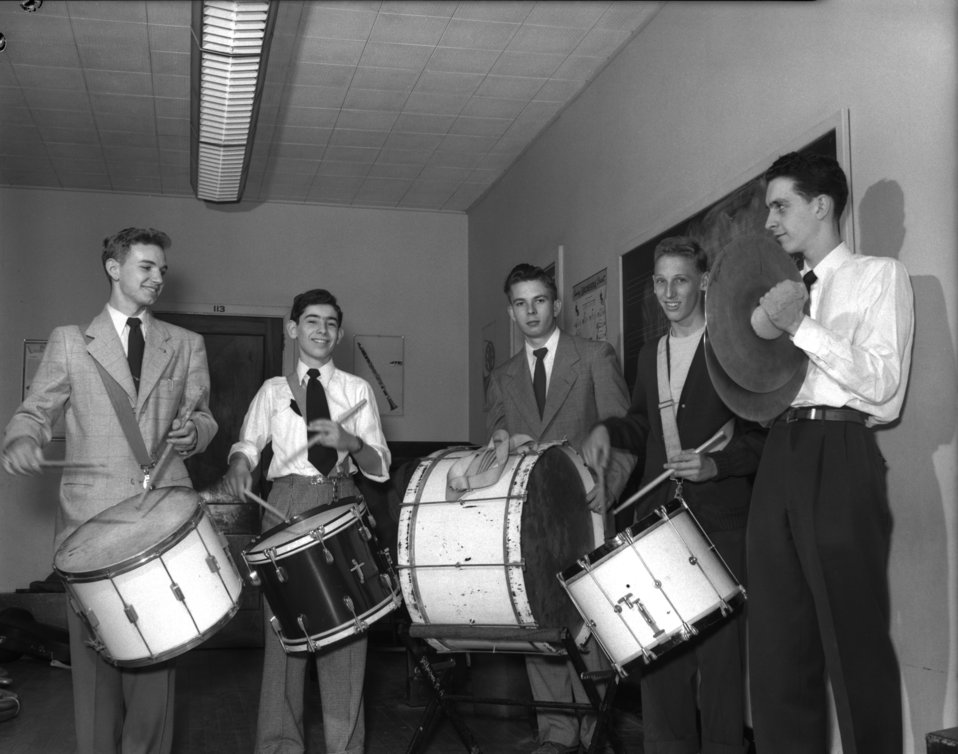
Tennessee State Band Festival Oak Ridge

004500-8c DOE photo Ed Westcott

Tennessee State Band Festival Oak Ridge Tennessee 4/29/1948